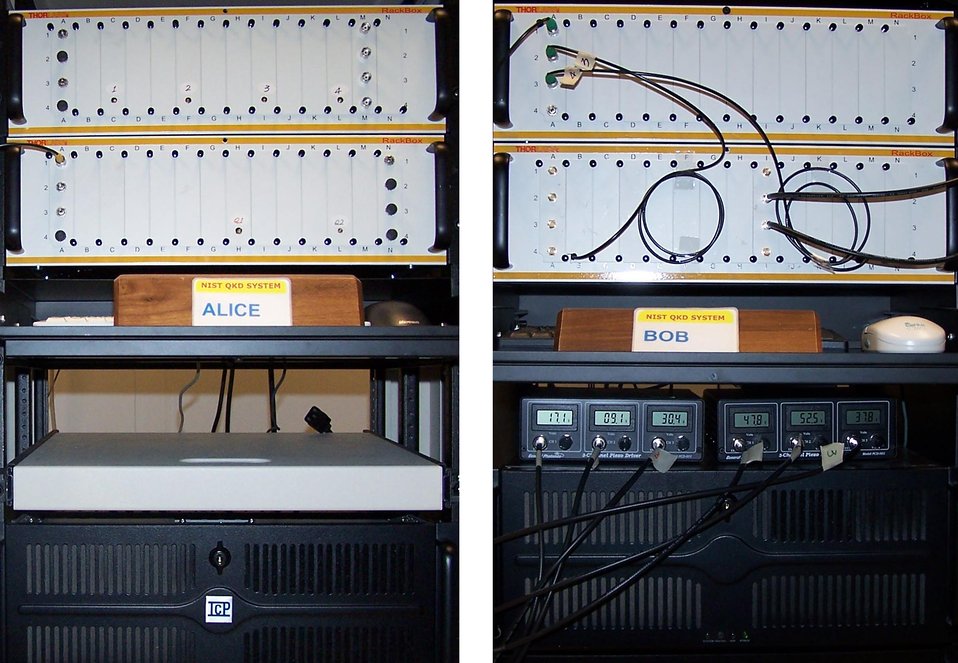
High-Speed Quantum Key System Wins Research Award

NIST's high-speed fiber quantum key distribution (QKD) system has been cited as one of the '100 most technologically significant' developments last year.